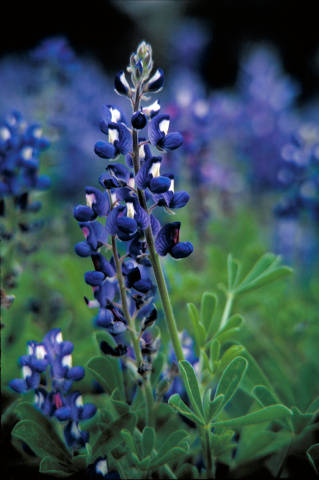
Texas bluebonnets